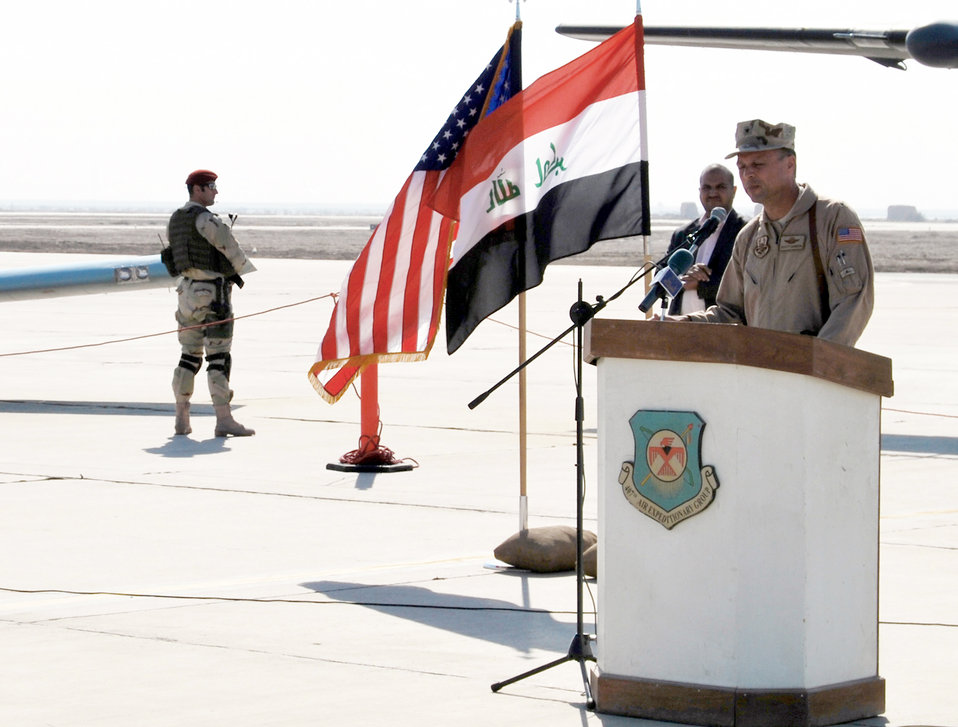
Iraqi air force officials open new facilities at Ali Air Base

Brig. Gen. Scott Hanson addresses audience members gathered at Ali Air Base, Iraq, Nov. 23, 2010, during a ceremony celebrating the arrival of the Iraqi Air Force's Squadron 70 and the grand opening of a new dining facility. General Hanson is the 321st Air Expeditionary Wing commander and Iraqi Training and Advisory Mission - Air Force director.